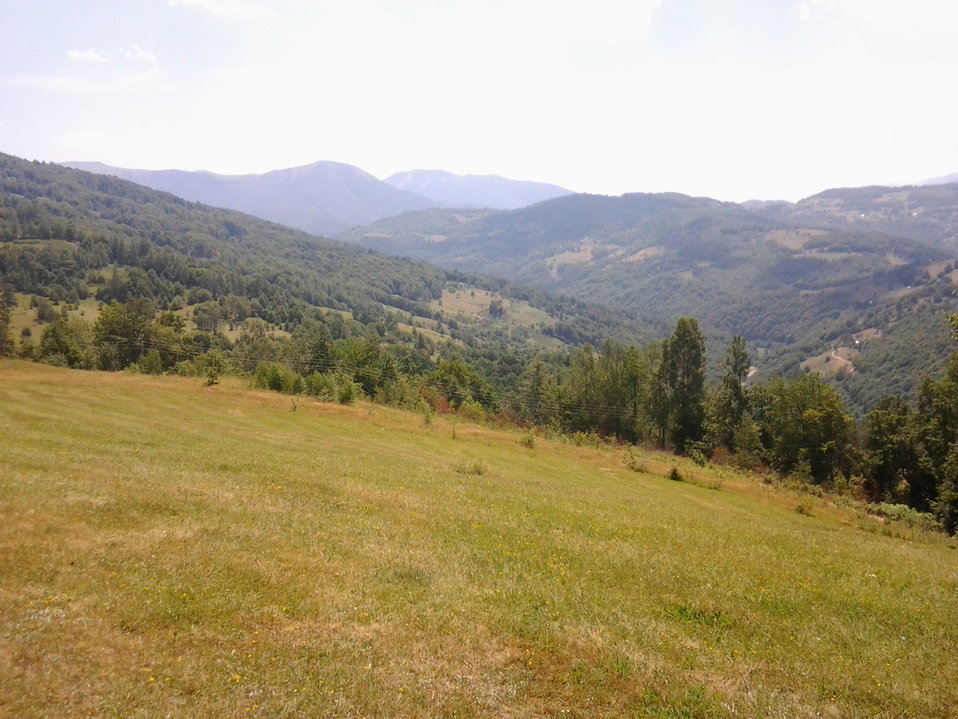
Српски / srpski: Јабучно, Бијело Поље, Црна Гора.